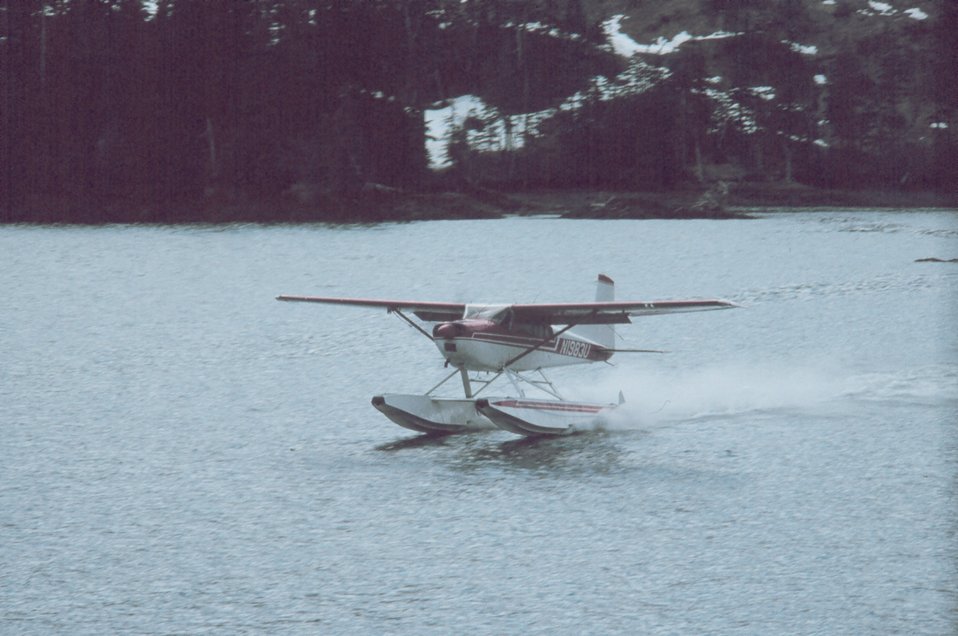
Float plane delivering parts for a heater